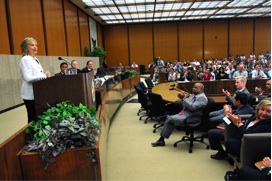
Secretary Clinton Delivers Remarks at Pride Month Celebration

U.S. Secretary of State Hillary Rodham Clinton delivers remarks at an event celebrating LGBT Pride Month at the U.S. Department of State in Washington, D.C., on June 22, 2010.